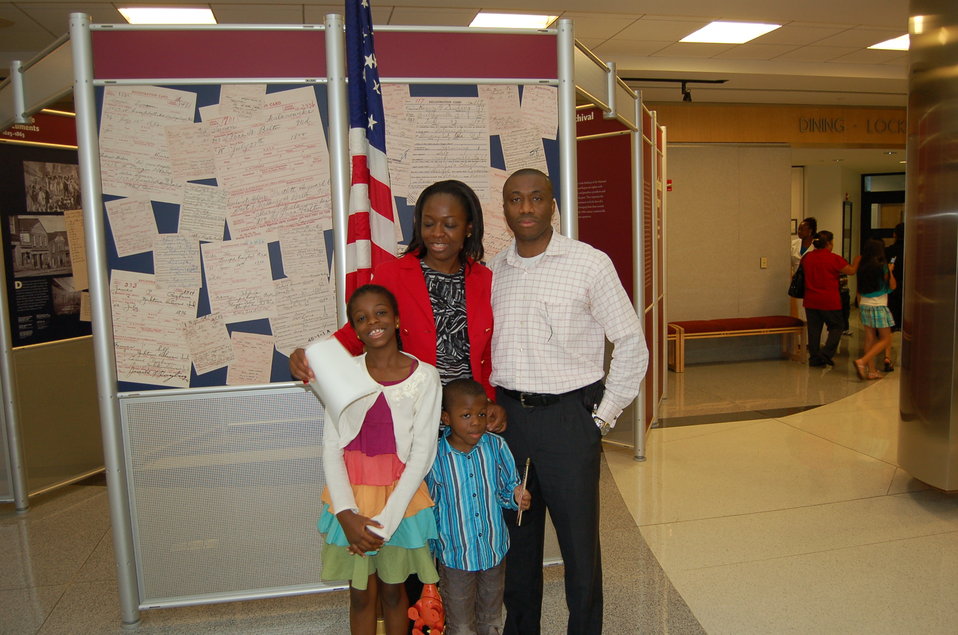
New Citizens